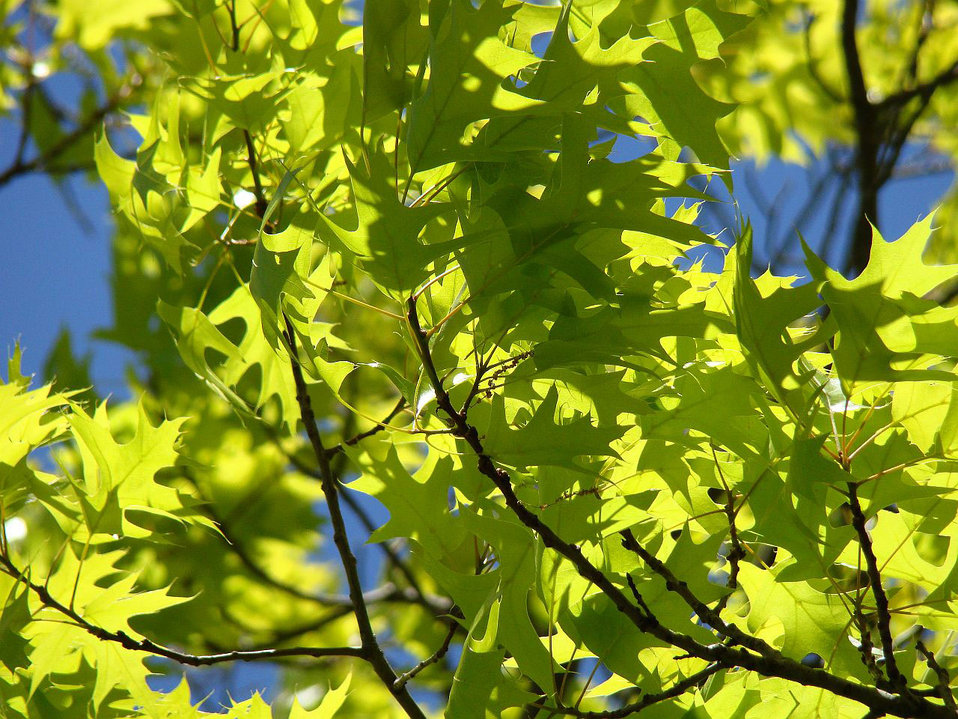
Spring branch

Fresh spring leaves dancing with the sun.